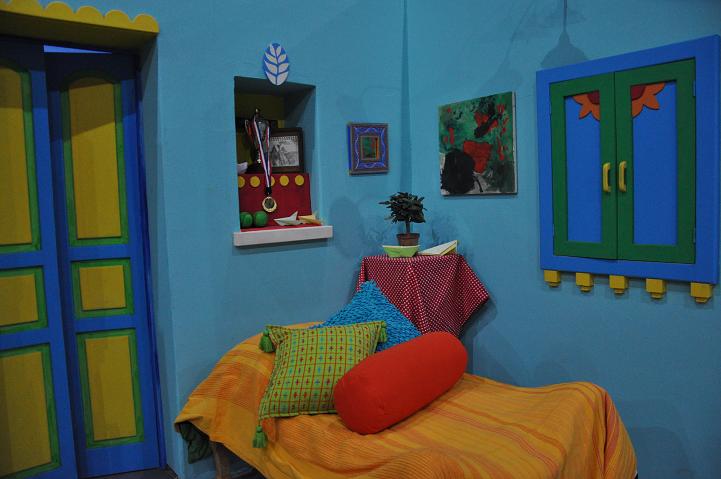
Sim Sim Hamara set.